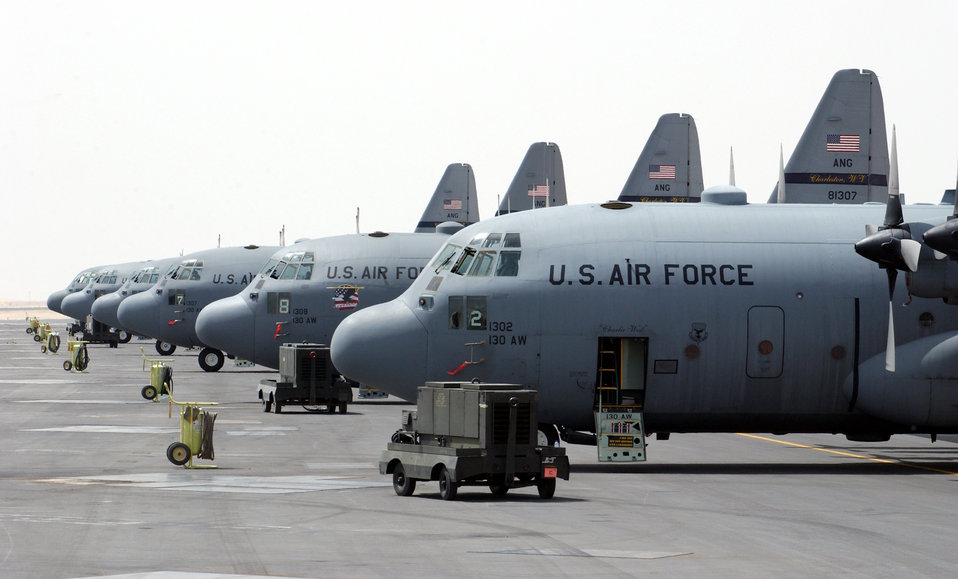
Hercules lineup

OPERATION IRAQI FREEDOM -- C-130 Hercules sit on the ramp at a forward-deployed location supporting stabilization efforts inside Iraq. The aircraft are from the West Virginia Air National Guard's 130th Airlift Wing at Charleston.